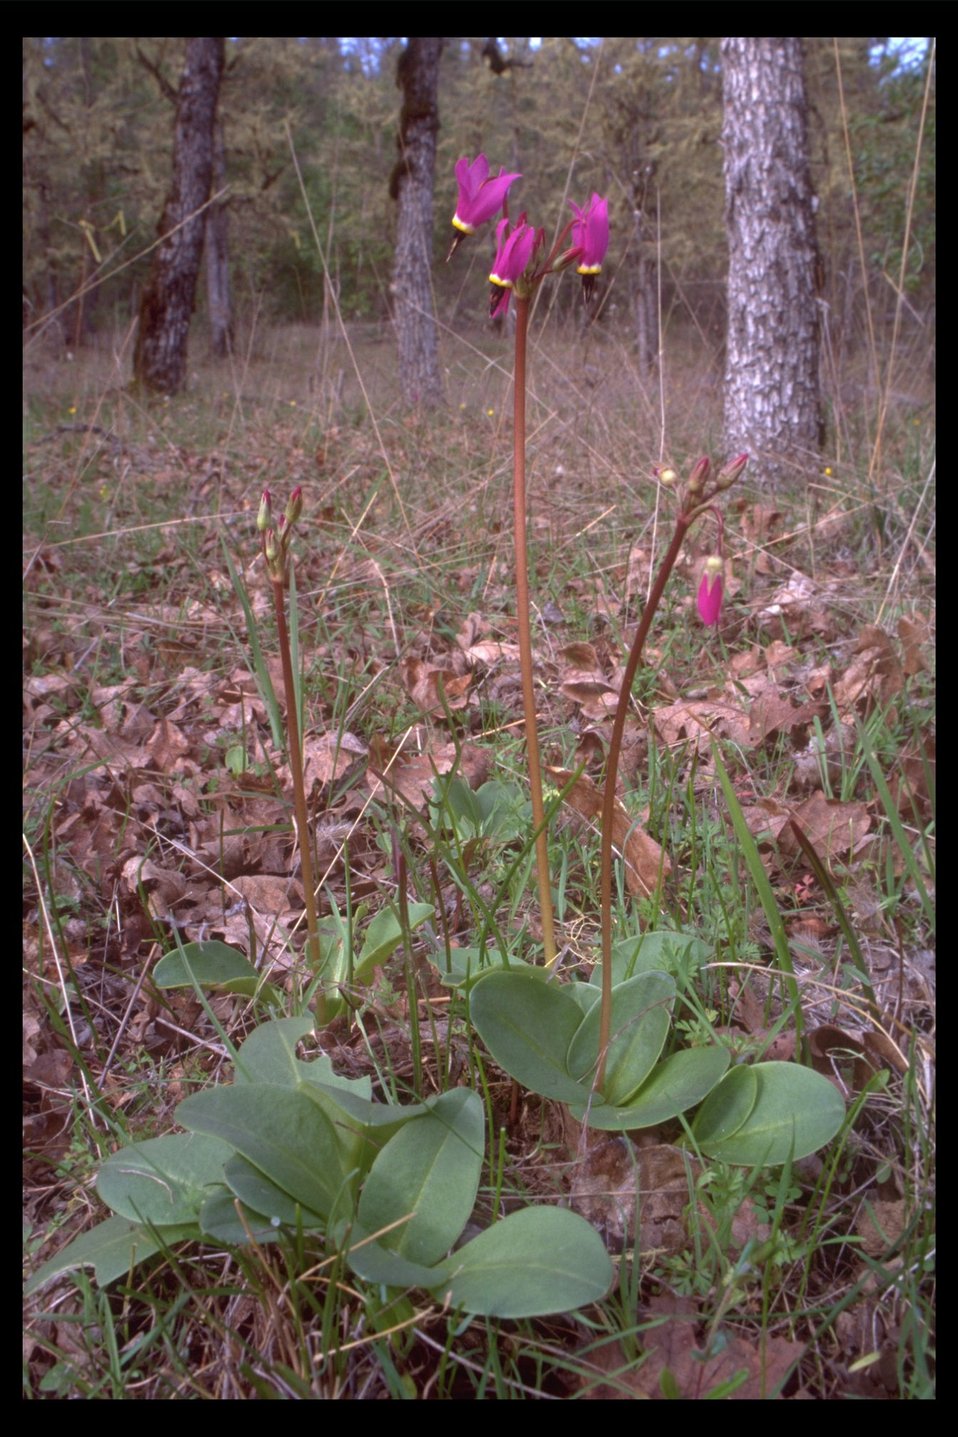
Henderson's Shooting Star (Dodecatheon hendersonii) at Upper Table Rock (UTR).